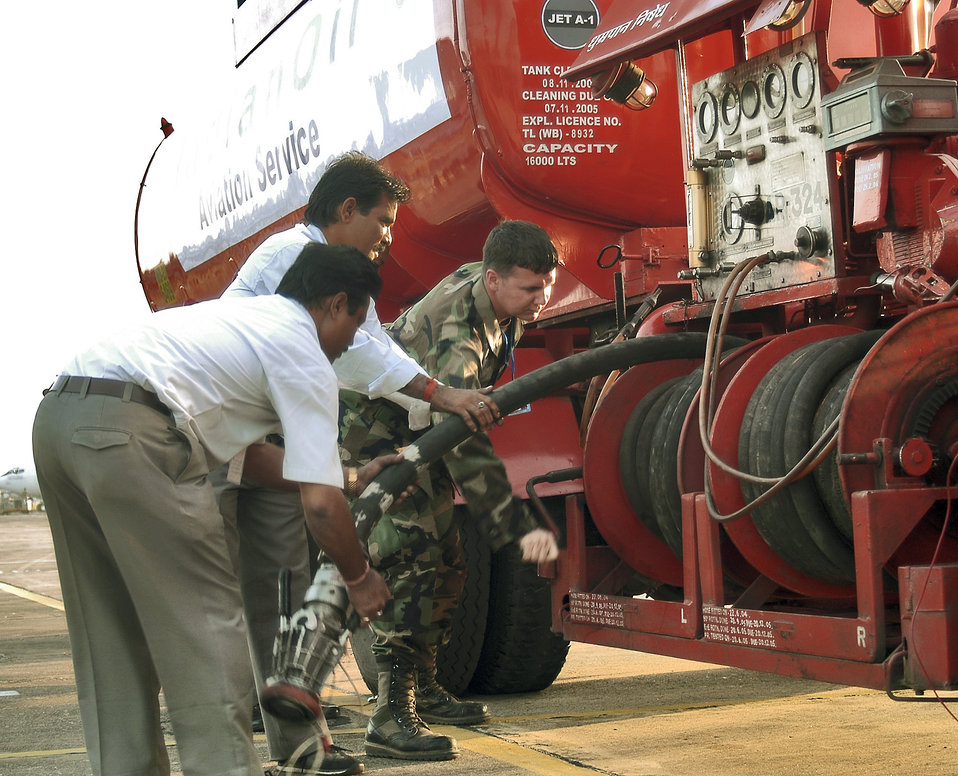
Cope India

KALAIKUNDA AIR STATION, India (AFPN) -- Staff Sgt. Trey Norris reels in a fueling hose after the refueling an F-16 Fighting Falcon during Cope India 2006. During the exercise, Sergeant Norris has worked closely with the Indian Oil Company to completing 146 aircraft refuels -- nearly 235,000 gallons of fuel. Sergeant Norris is a fuels distribution supervisor from the 374th Logistics Readiness Squadron at Yokota Air Base, Japan.